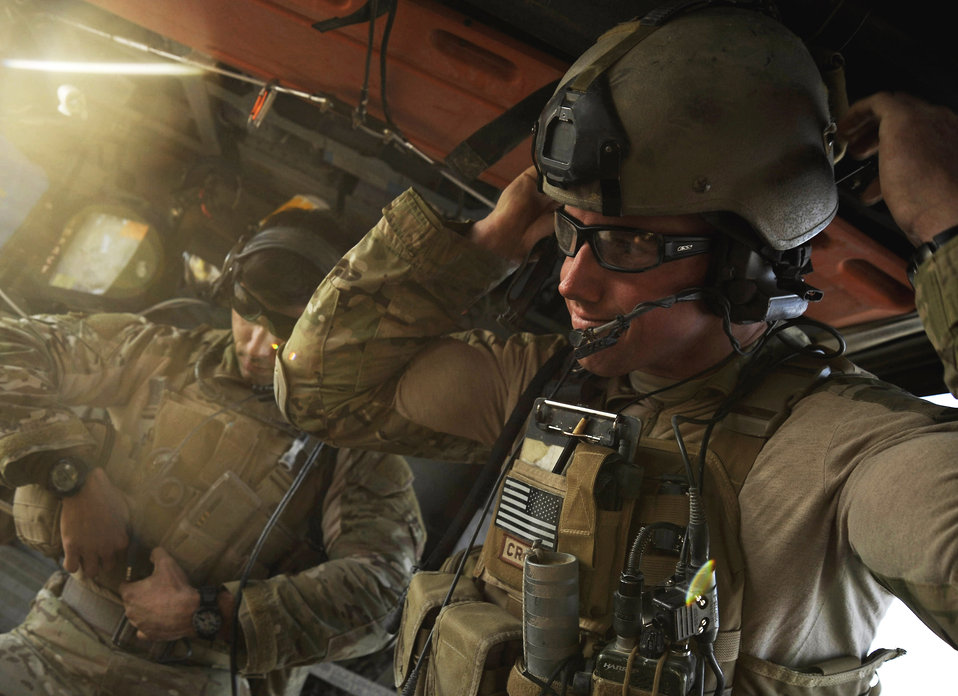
Combat Rescue Officer prepares his gear

A U.S. Air Force Combat Rescue Officer from the 66th Expeditionary Rescue Squadron stationed at Davis-Monthan AFB, Ariz., deployed to Camp Bastion, Afghanistan, prepares his gear, Dec. 7, 2009. The members of the 66th ERQS can respond to a medical evacuation in less than seven minutes to pick up patients.